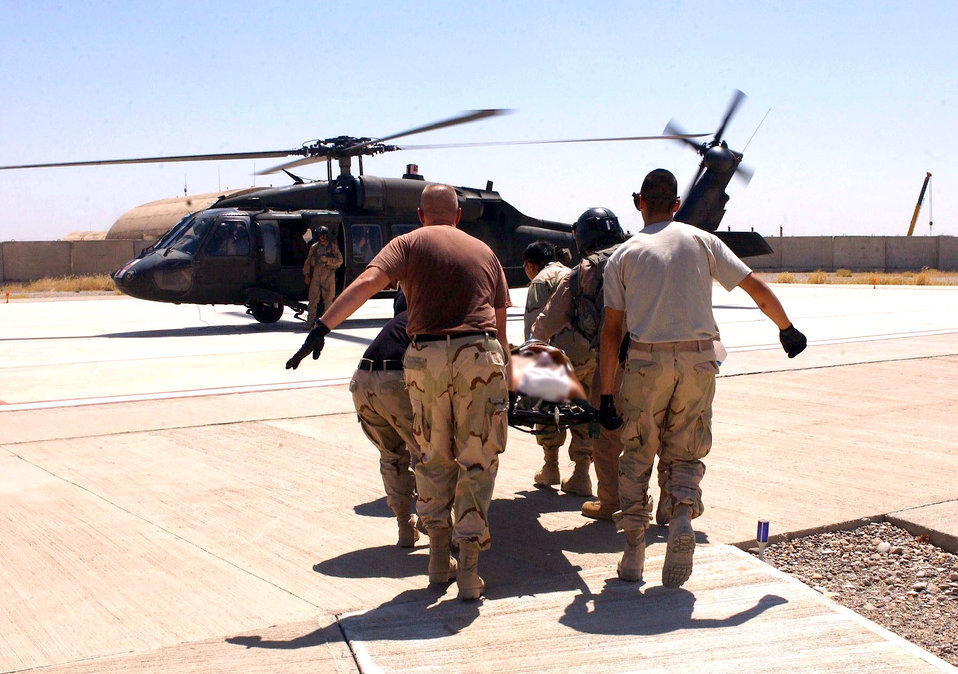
Medical evacuation

Airmen with the 506th Expeditionary Medical Group at Kirkuk Air Base, Iraq, load an injured patient on an Army UH-60 Black Hawk for medical evacuation on Wednesday, June 21.